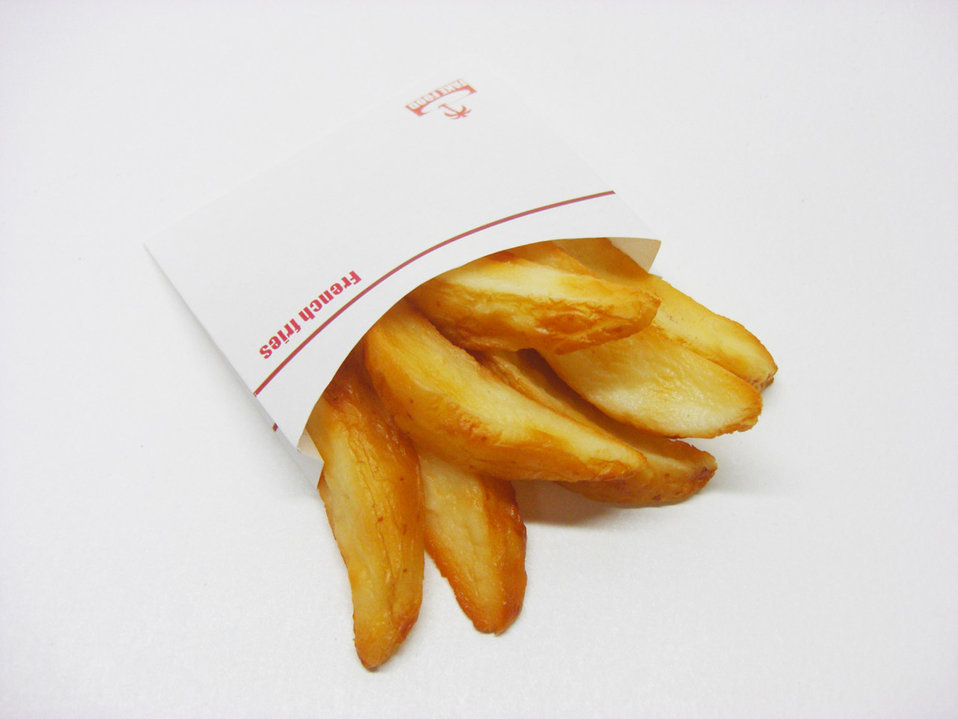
French fries (fried potato).